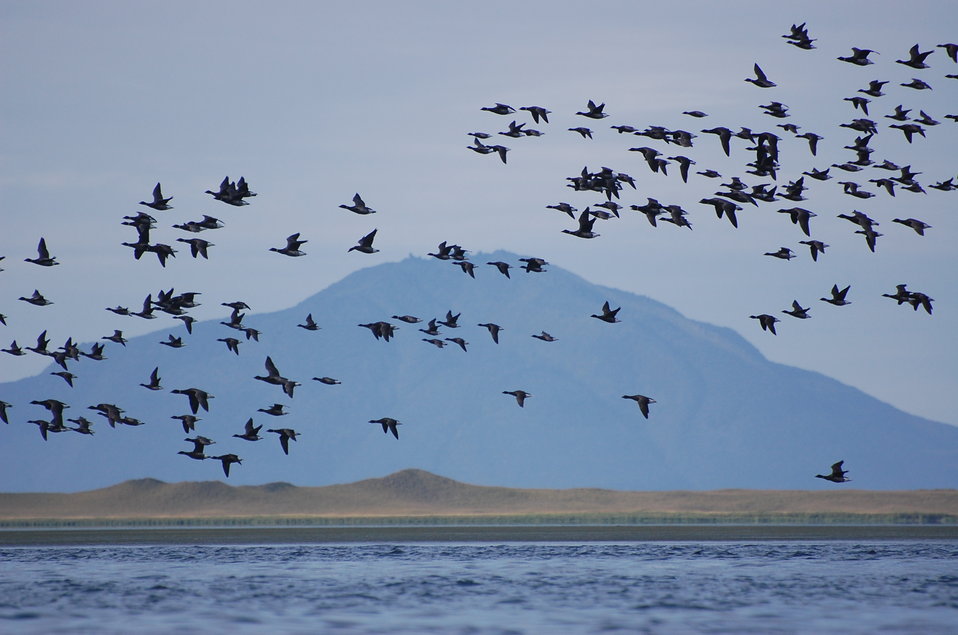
Brant and Amak Island

Brant at Izembek Lagoon, Izembek National Wildlife Refuge